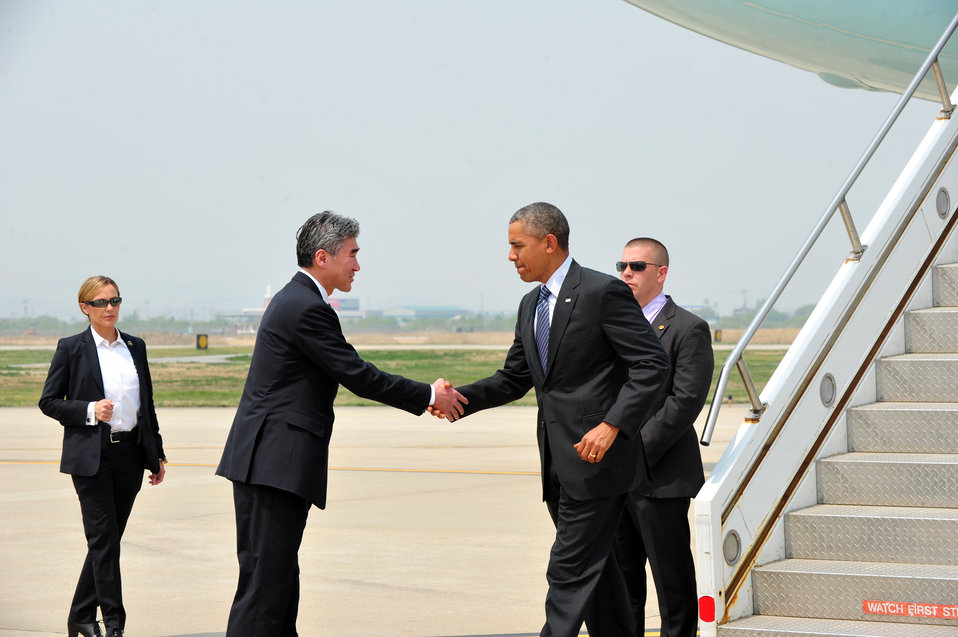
President Obama Arrives in Seoul, Republic of Korea

President Barack Obama is greeted by U.S. Ambassador to the Republic of Korea Sung Kim upon arrival in Seoul, Republic of Korea on April 25, 2014.